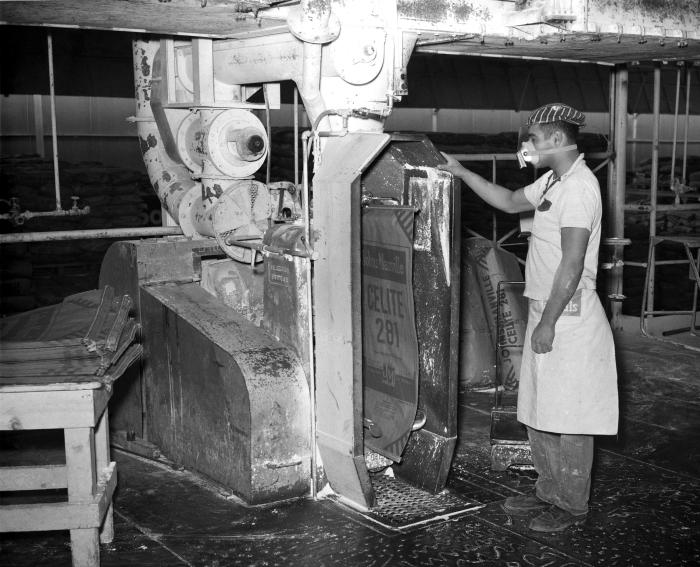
This 1958 historical photograph was provided by the Center for Disease Control's (CDC), National Institute for Occupational Safety and Health (NIOSH), and depicted a Lompoc, California industrial plant worker wearing a respirator while he was filling bags with diatomaceous earth. Inhaled dust or other airborne particulate materials containing silica that is deposited in the lungs, will cause the lung tissue to react by creating generalized nodular fibrotic changes, and is known as 'pneumoconiosis', which is also know an pneumosilicosis, or 'grinders' disease'. The image originally appeared in a U.S. Public Health Service Publication No. 601, in an article entitled,'Pneumoconiosis in Diatomite Mining and Processing', 1958.